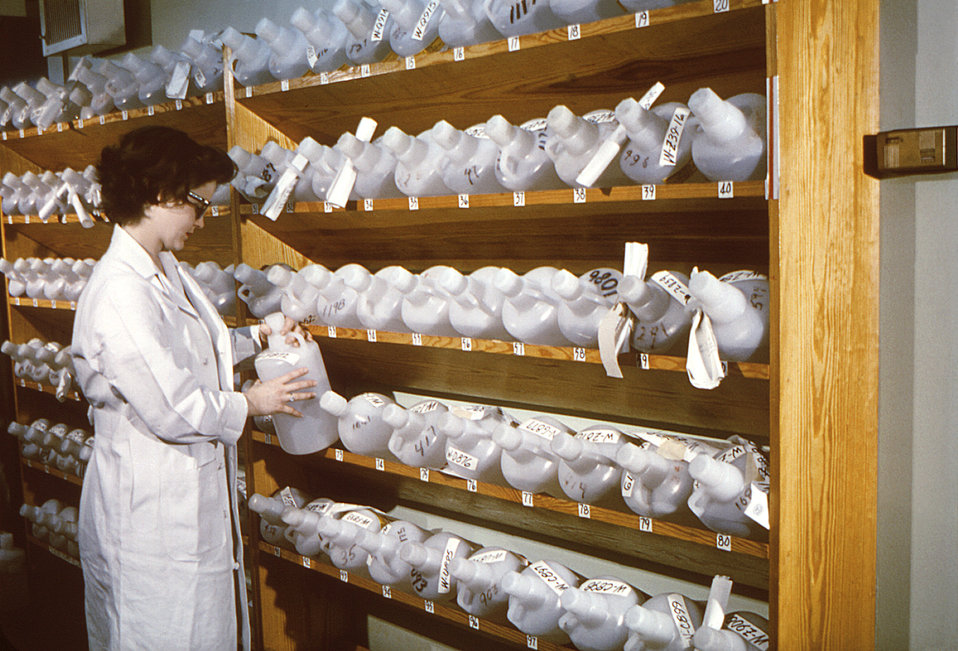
This historic 1963 image depicted a laboratory technician as she was in the process of storing water samples pending the completion of a radiochemical analysis.